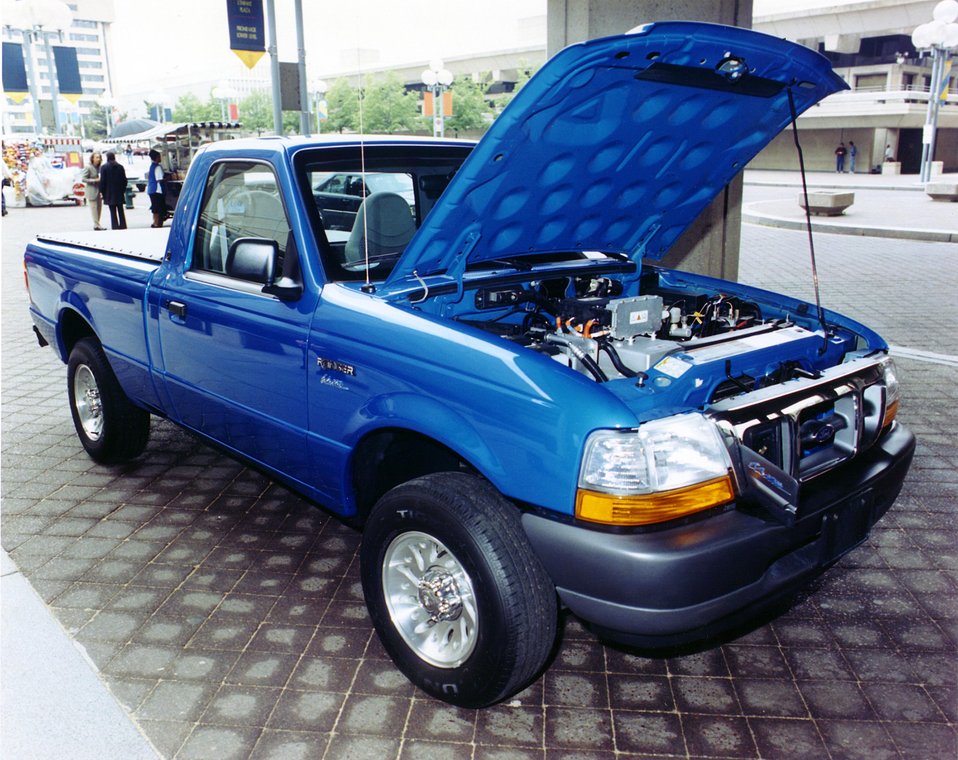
ELECTRIC VEHICLE FEATURED AT THE DEPARTMENT OF ENERGY ON EARTH DAY 2000.